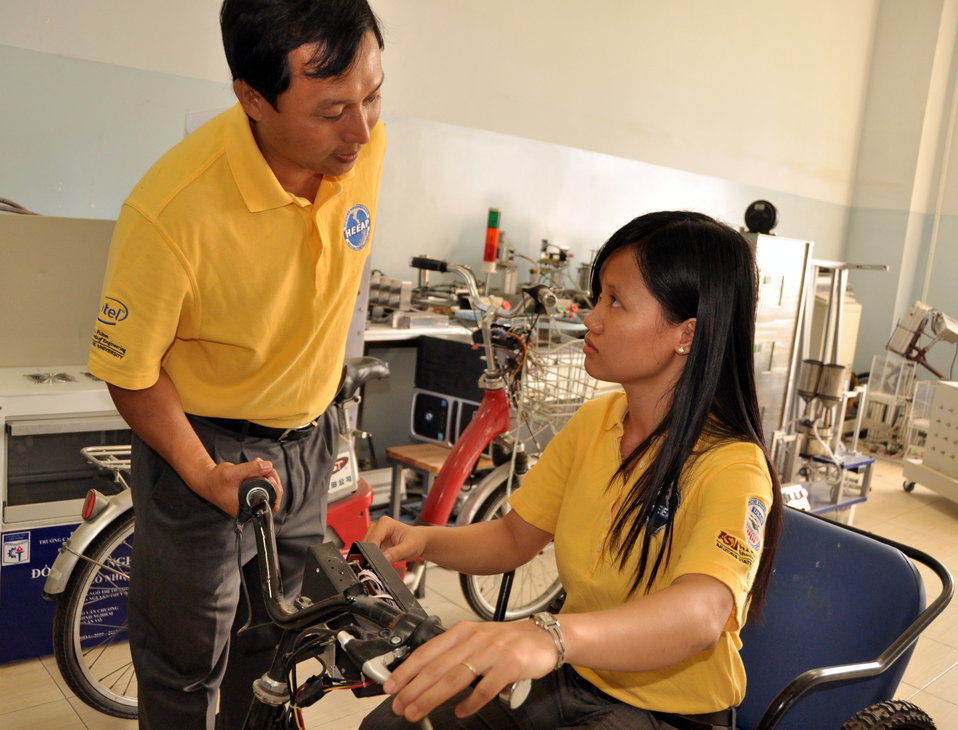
HEEAP Partner, Cao Thang Technical College

Faculty trained with support of HEEAP
Ho Chi Minh City, January 12, 2013